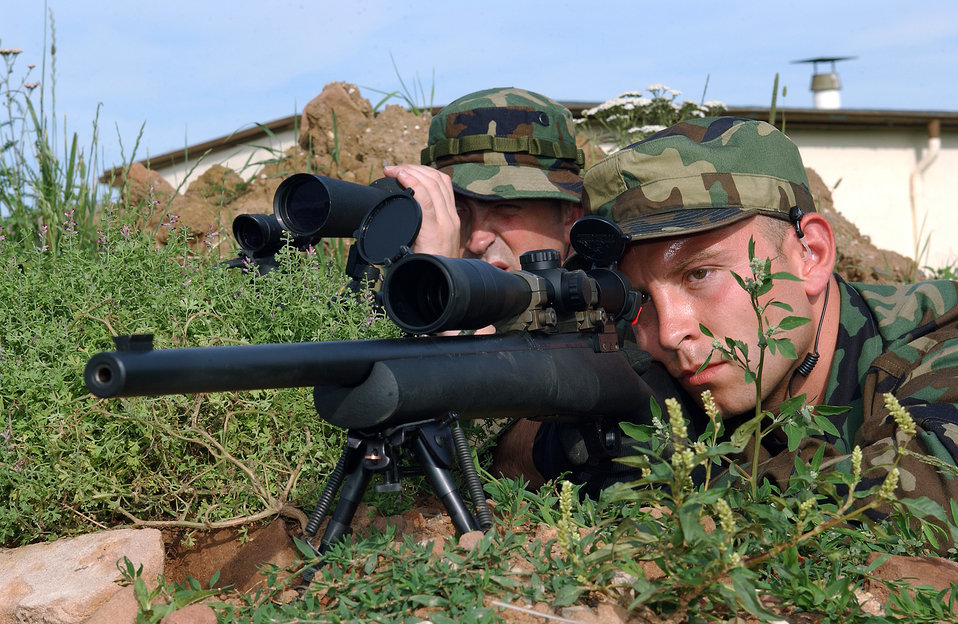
Sniper skills

SPANGDAHLEM AIR BASE, Germany (AFPN) -- Staff Sgts. Alexander Erb (foreground) and Brian Little practice their sniper skills during a training scenario here. Both sergeants are members of the 52nd Security Forces Squadron's emergency services team.